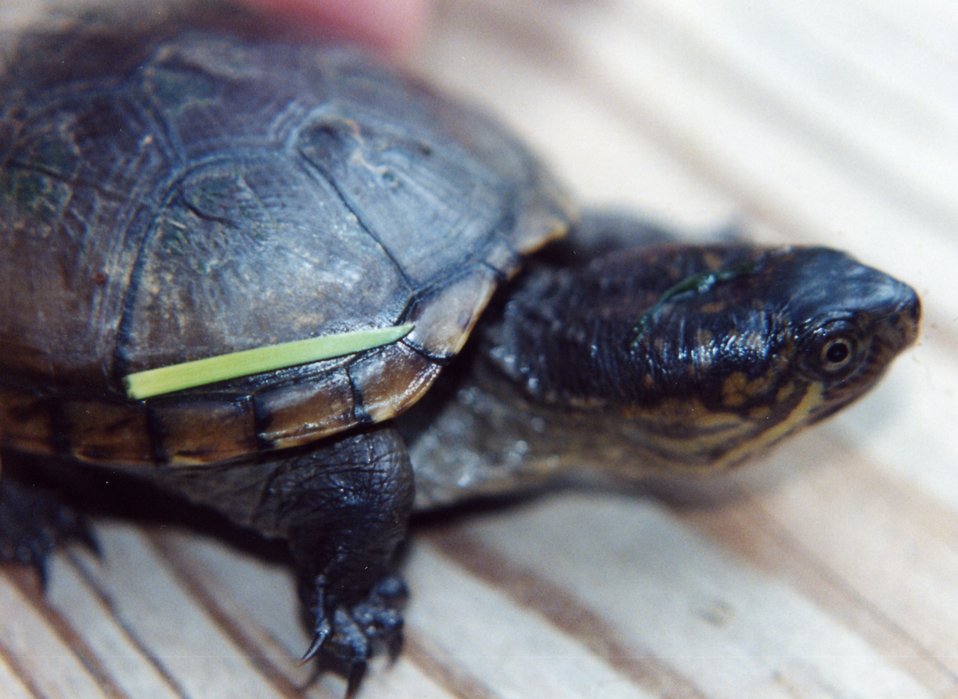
Juvenile mud turtle.